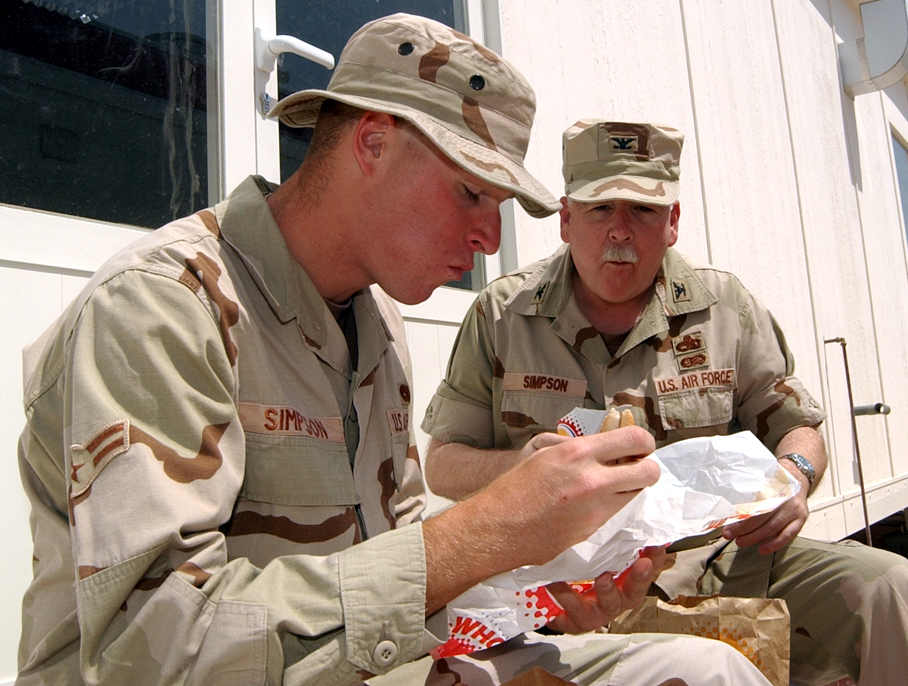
Simpsons reunited

SOUTHWEST ASIA -- Col. Bill Simpson shares lunch with his son, Airman 1st Class Doug Simpson. Colonel Simpson is from Tinker Air Force Base, Okla., and Airman Simpson is from Pope AFB, N.C. They are at the same forward-deployed location here.